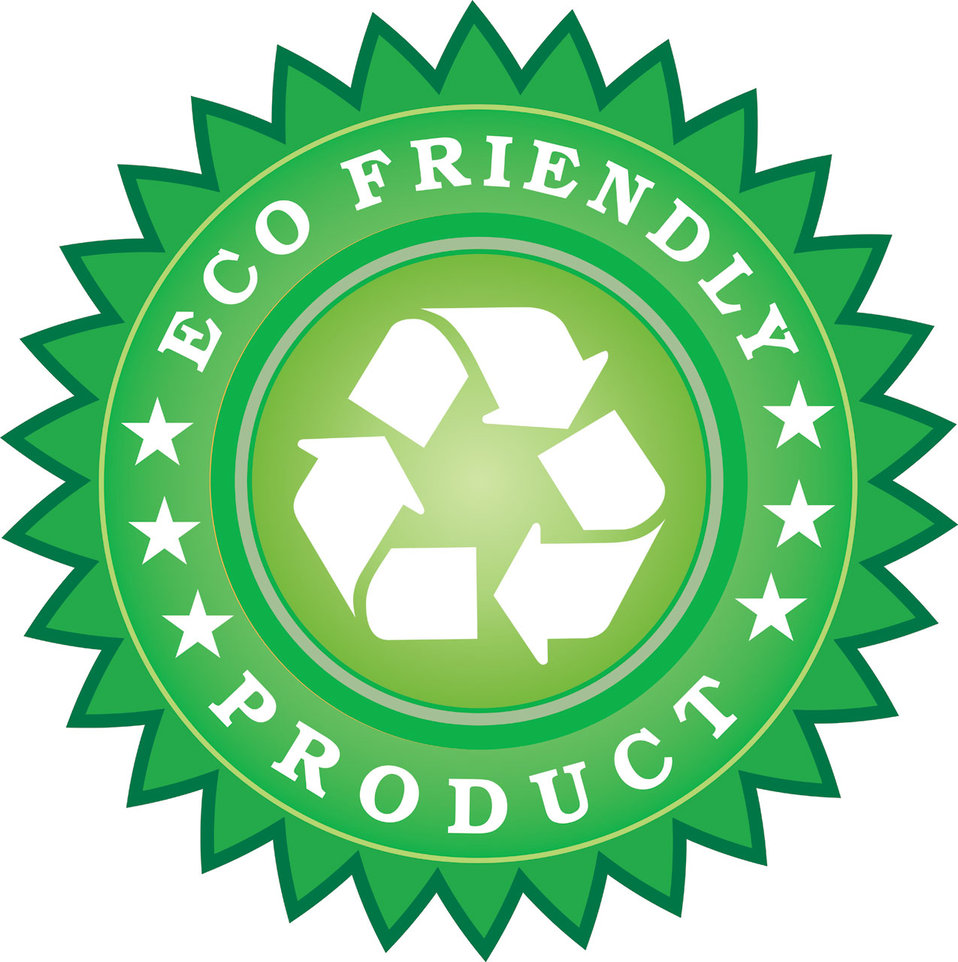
Eco friendly product sticker

Free eco friendly product sticker. available in vector format also at vectorportal..